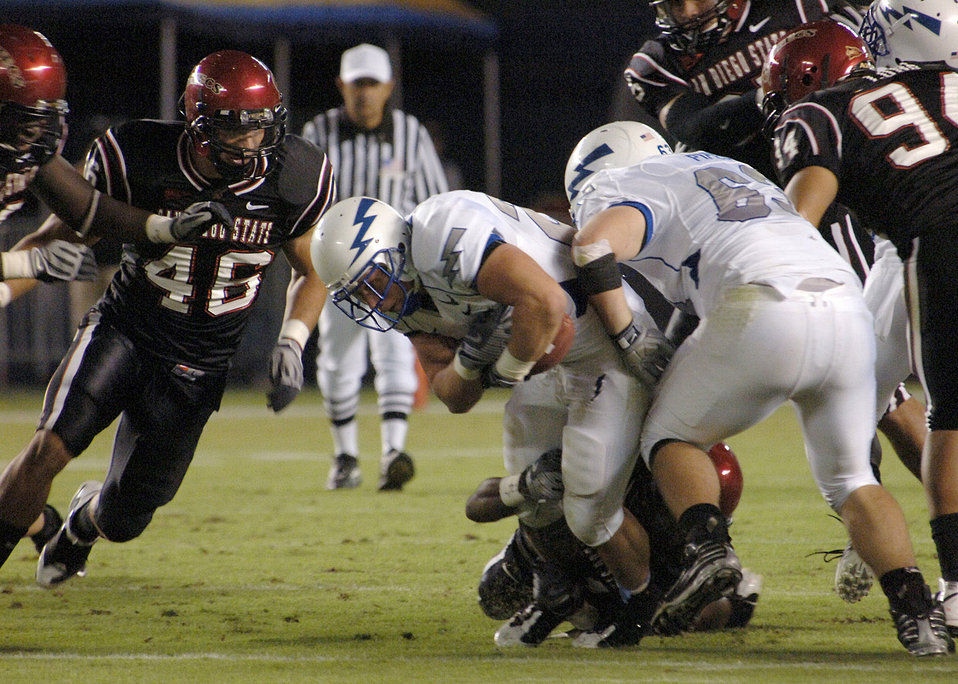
Football: Falcon freshmen spark 35-10 win

U.S. Air Force Academy Falcons fullback Todd Newell drags a tackler as he rushes for additional yardage Oct. 11 in a game against San Diego State in San Diego. Newell, a San Diego native and team captain, carried the ball 19 times for 77 yards and a touchdown in the Falcons' 35-10 win over San Diego State.